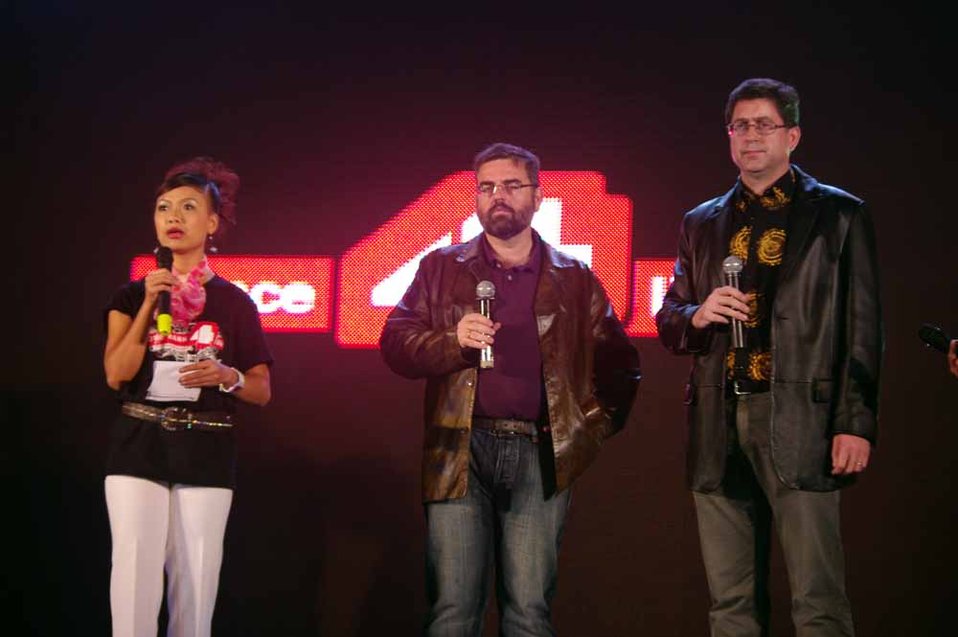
dance4life, Hanoi